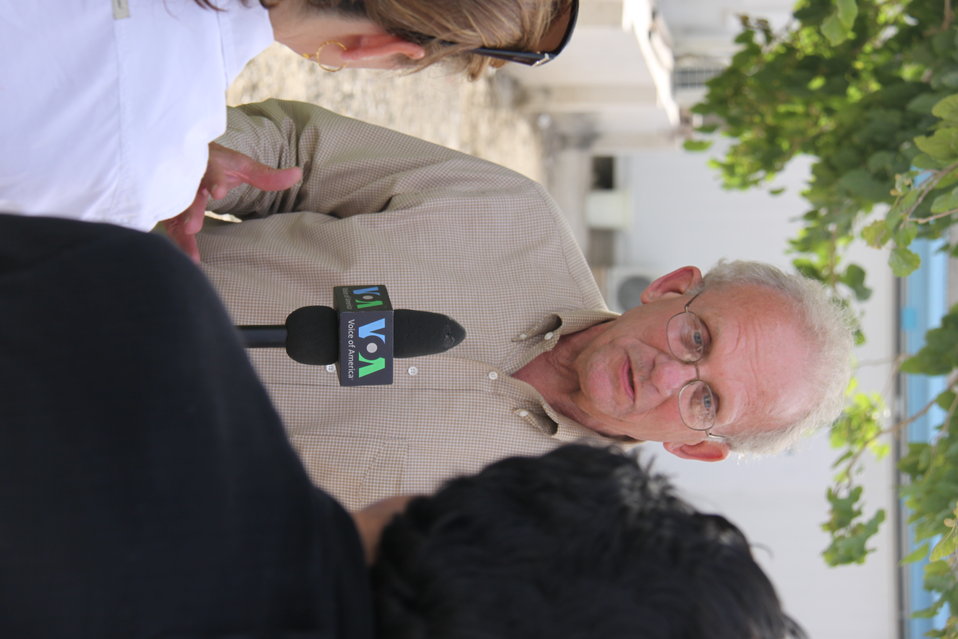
Meeting with Local Leaders in Kandahar